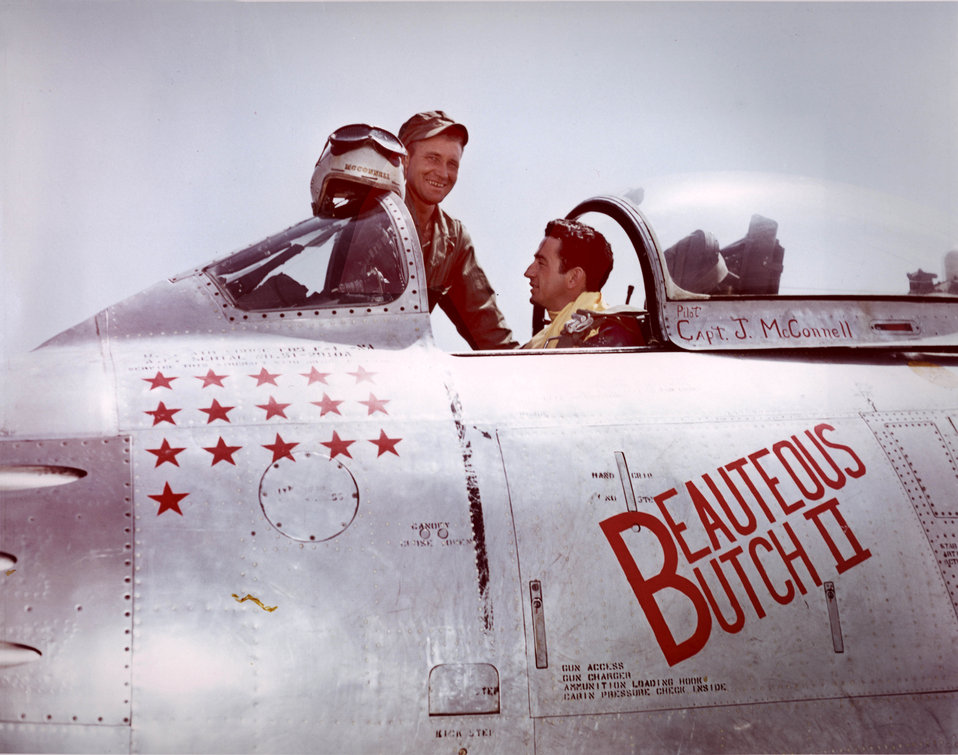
Top Ace of the Korean War

Capt. Joseph McConnell Jr., a pilot with the 51st Fighter Intercepter Wing, talks with his crew chief while in the cockpit of his F-86 Sabre jet,